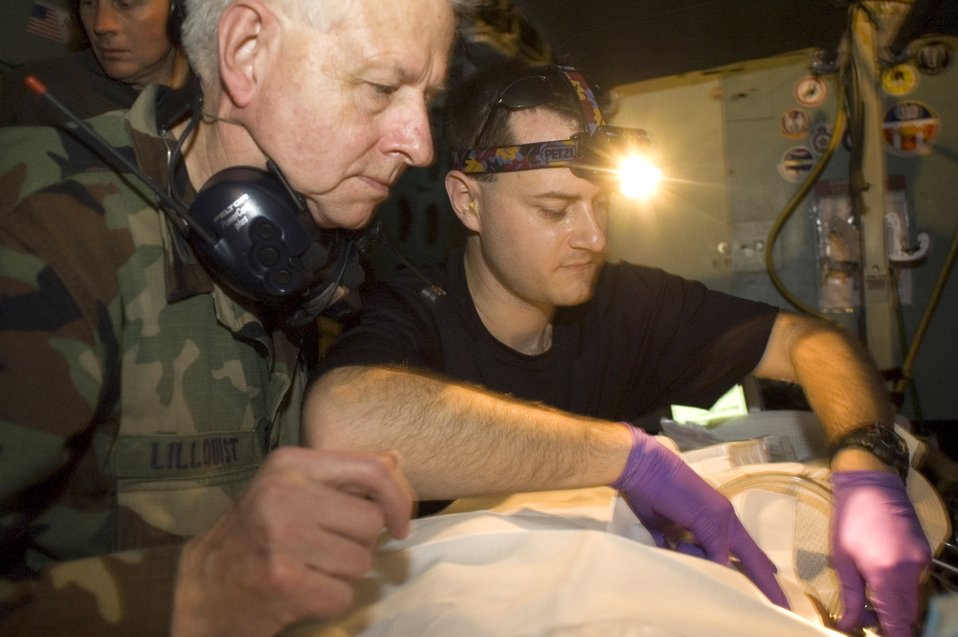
Brooks training program integrates medical processes

In the back of the U.S. Air Force School of Aerospace Medicine's C-130 Hercules simulator, nurse anesthetist Col. Rune Lillquist observes as Capt. (Dr.) Chris Wentzel inserts a chest tube into a patient. Colonel Lillquist is assigned to Brooks City-Base, Texas. Captain Wentzel is assigned to Andrews Air Force Base, Md.